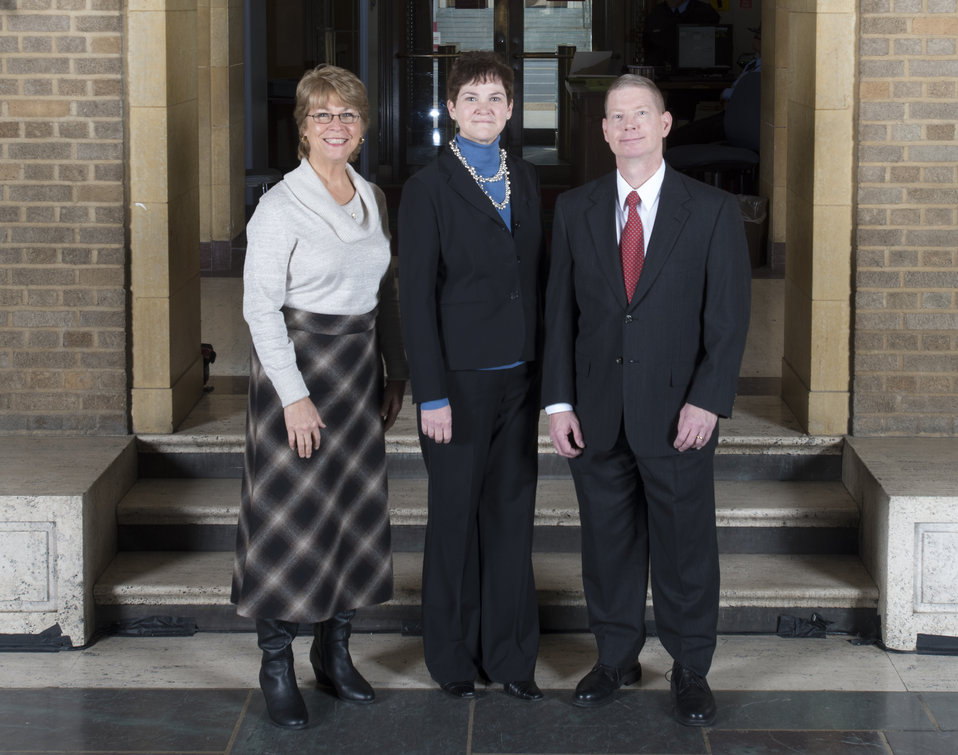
Agriculture Deputy Secretary Krysta Harden stands with the Silver Presidential Volunteer Service Awardees on the patio at the U.S. Department of Agriculture (USDA) in Washington, D.C. on Wednesday, Dec. 11, 2013. The President’s Silver Volunteer Service Award is given to employees that havs served a minimum of 250 ours and a maximum of 499 hours of service.